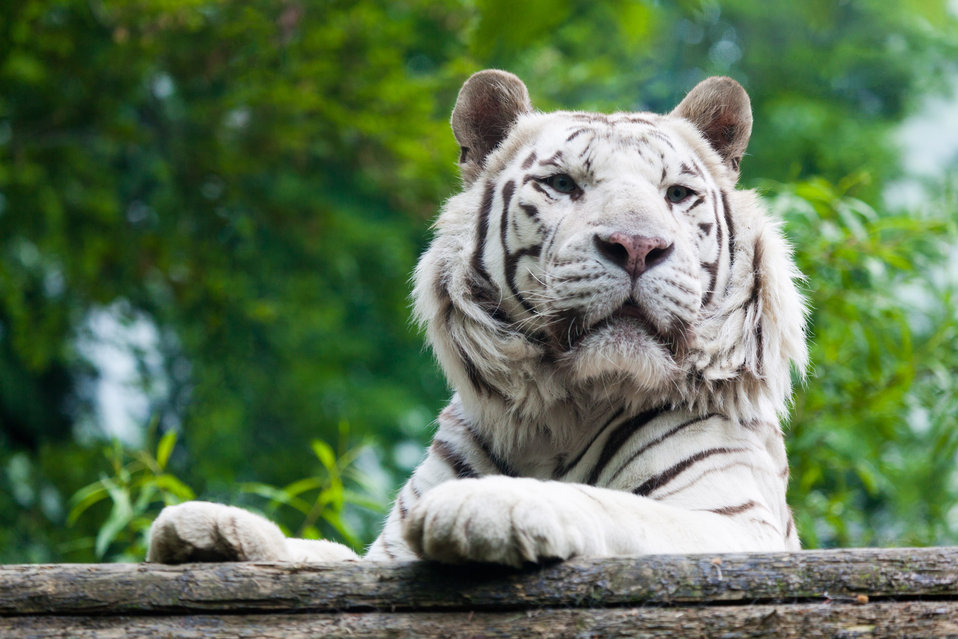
White tiger in a zoo.